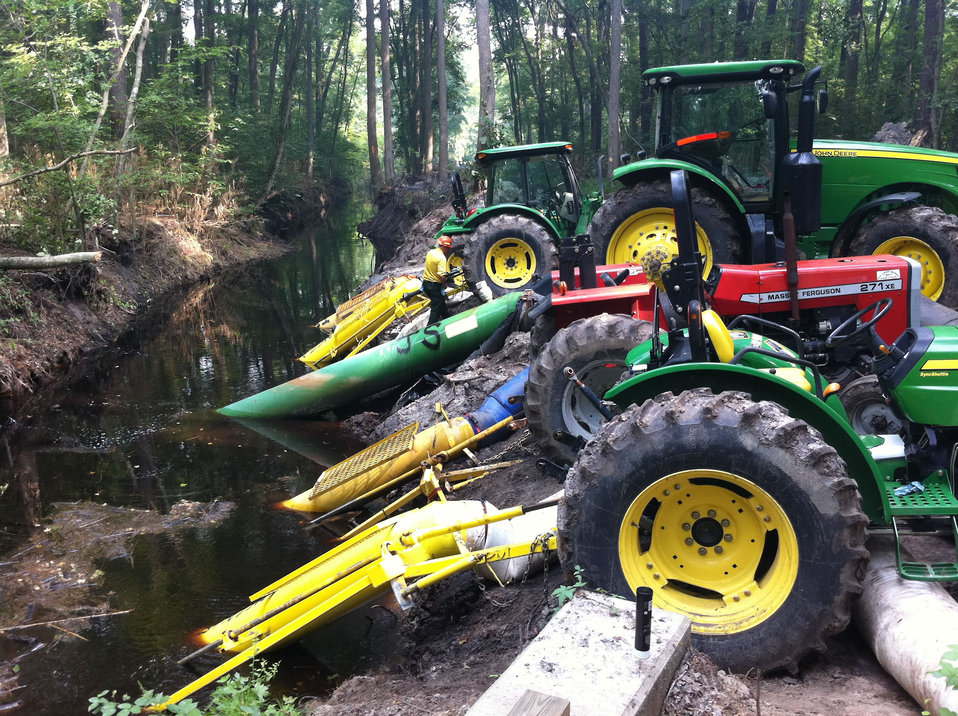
Tractor pull

Suffolk, VA, August 2011: Tractor motors are used to help draw water from flooded ditches to irrigate burnng peat soils at the Lateral West Fire on Great Dismal Swamp National Wildlife Refuge.